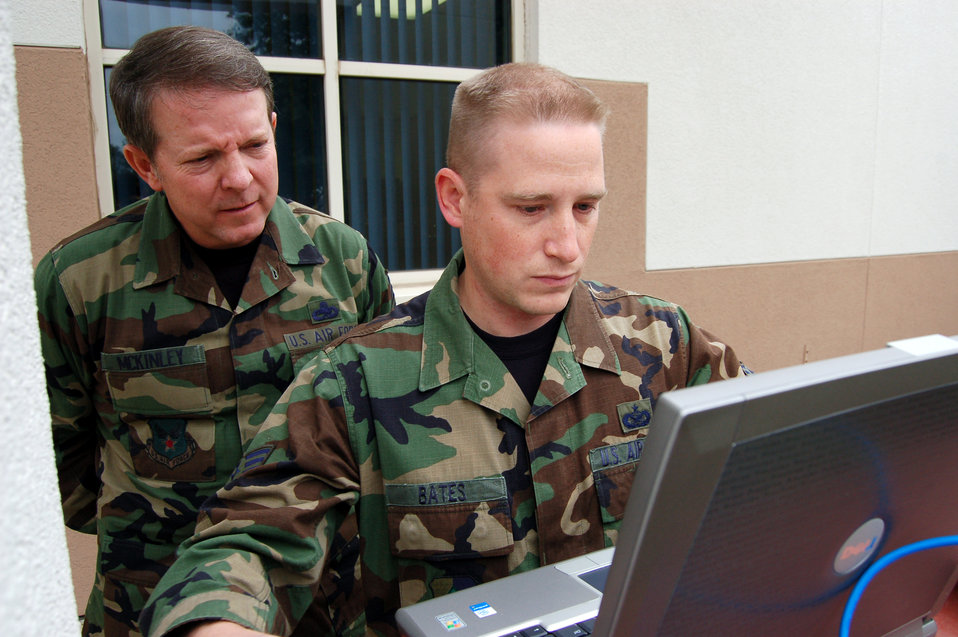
Chief McKinley visits San Antonio

Staff Sgt. Matt Bates shows Chief Master Sgt. of the Air Force Rodney J. McKinley how to operate a remote satellite system during his visit to the Air Force News Agency in San Antonio, Texas, on Dec. 5.